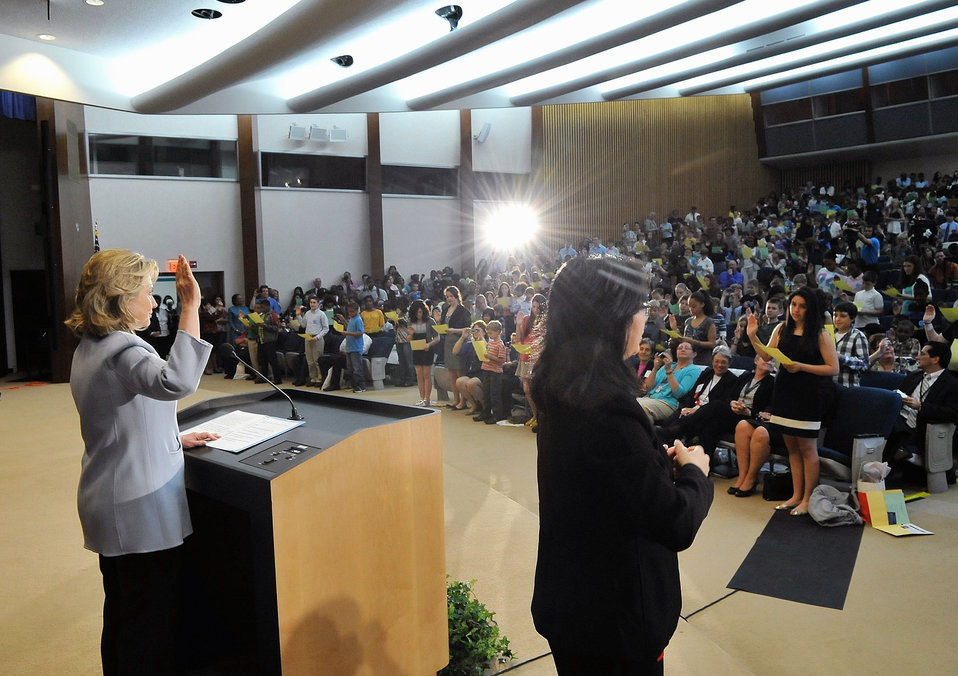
Secretary Clinton Delivers Remarks for Take Your Child to Work Day

U.S. Secretary of State Hillary Rodham Clinton delivers remarks in honor of Take Your Child to Work Day, at the U.S. Department of State in Washington, D.C., on April 28, 2011.